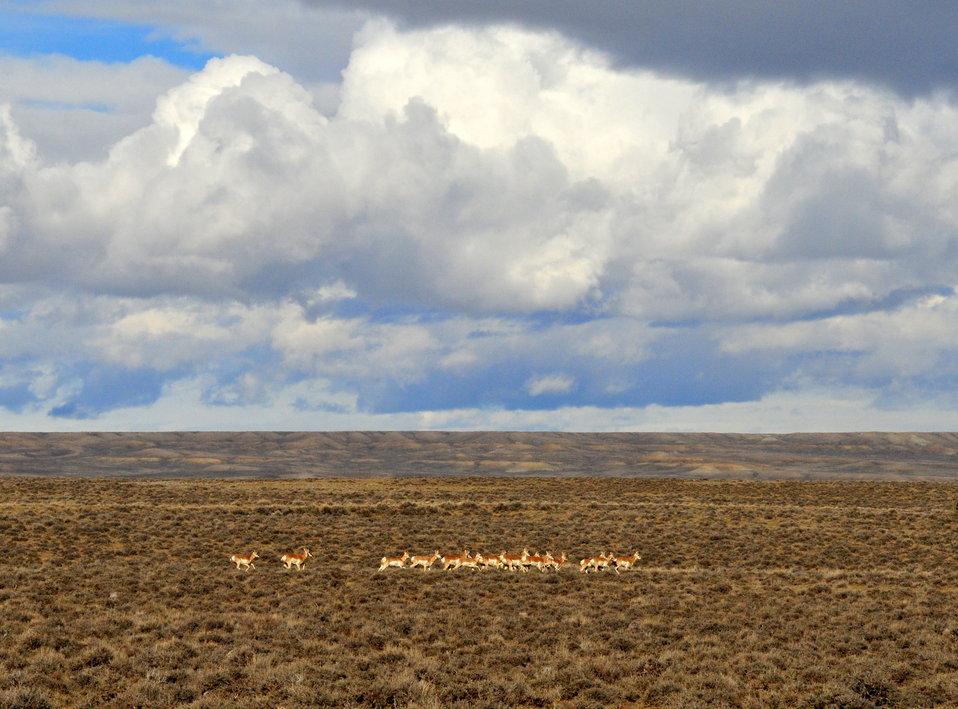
Pronghorns near Seedskadee NWR 02

A group of pronghorns in sage-steppe of southwest Wyoming near Seedskadee NWR